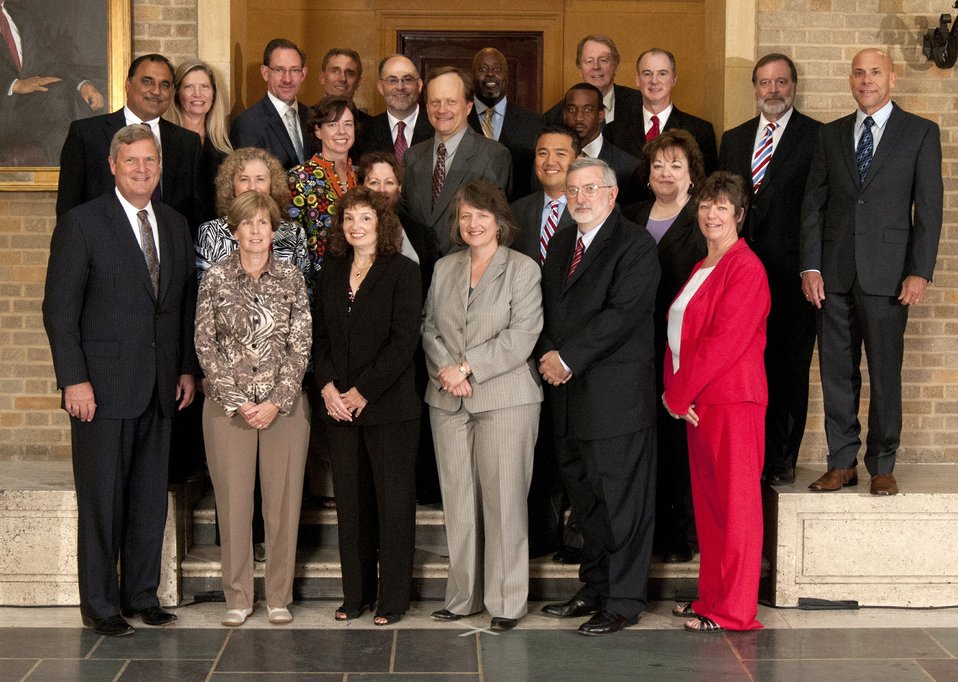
Agriculture Secretary Tom Vilsack and Deputy Agriculture Secretary Kathleen Merrigan with Honor Award Group for Business Services Transformation Team Office of Research, Education, and Economics (REE) on the patio of the U.S. Department of Agriculture in Washington, D.C. on Wednesday, Sept. 12, 2012. The Business Services Transformation Team lead the successful transformation of REE’s business services into virtual centers that effectively use limited staff, reduce costs, and capitalize on new technologies to enhance work performance.